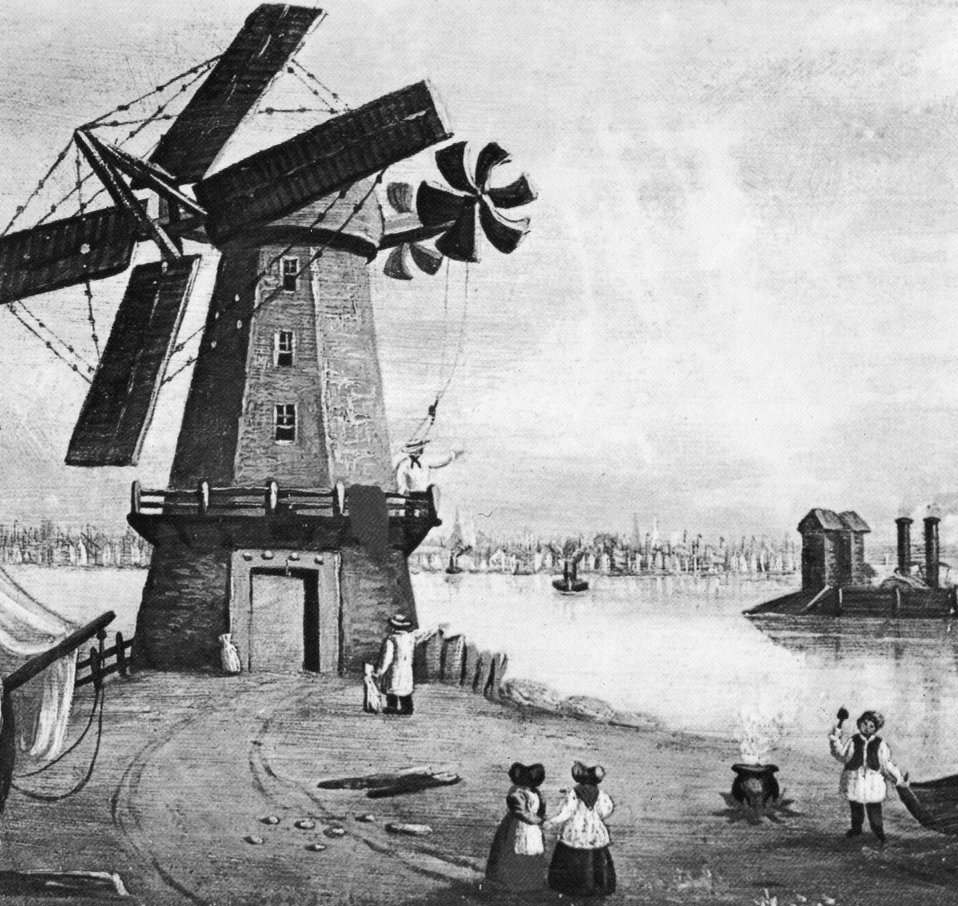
Through the time of Jefferson, the only important source of industrial power other than the water wheel was a windmill like this American one of 1830. c. undated